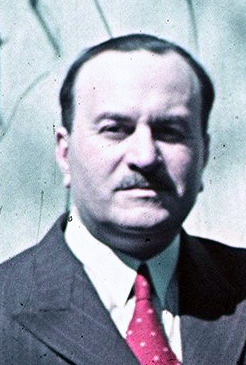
Română: dr. med. Valentin Sava